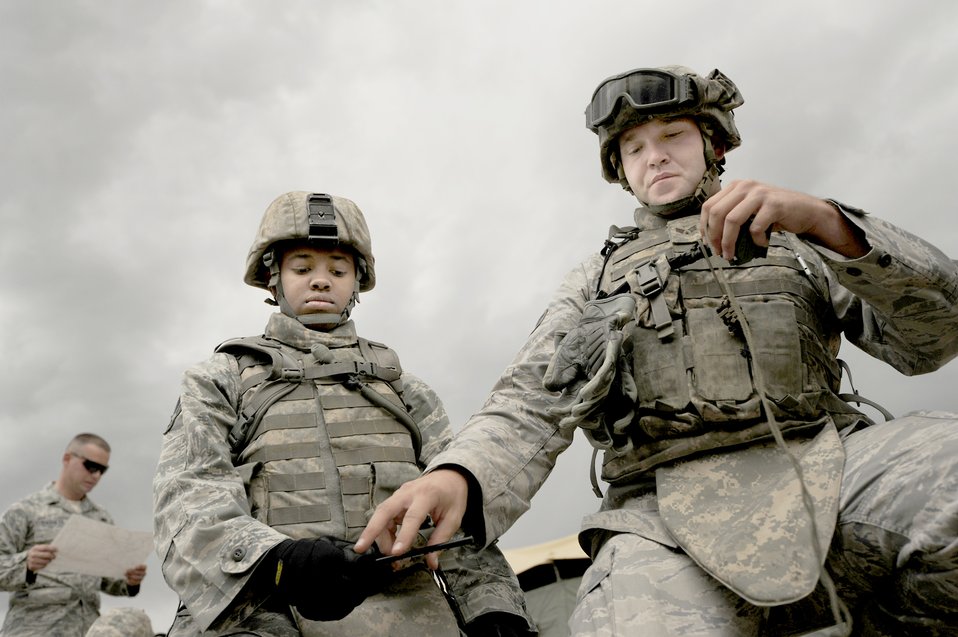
Combat Readiness Training

Airmen participate in land navigation drills during the 75th Security Forces Combat Readiness Training course Sept. 22, 2010, at Hill Air Force Base, Utah. The course teaches Airmen basic tactical movements, land navigation and self aid buddy care.